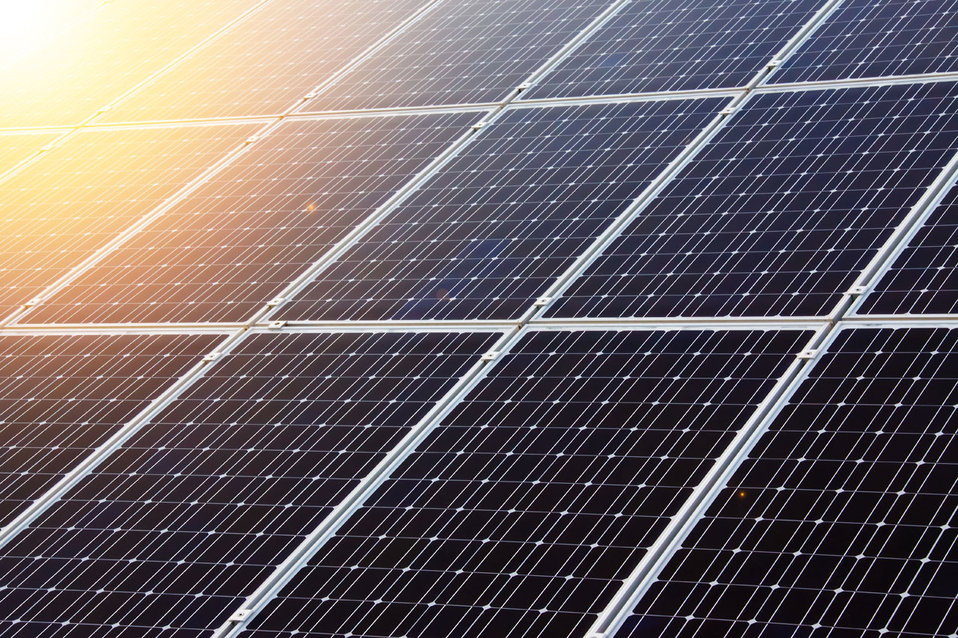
Solar panels

Photovoltaic panels pattern with sunlight in the corner.